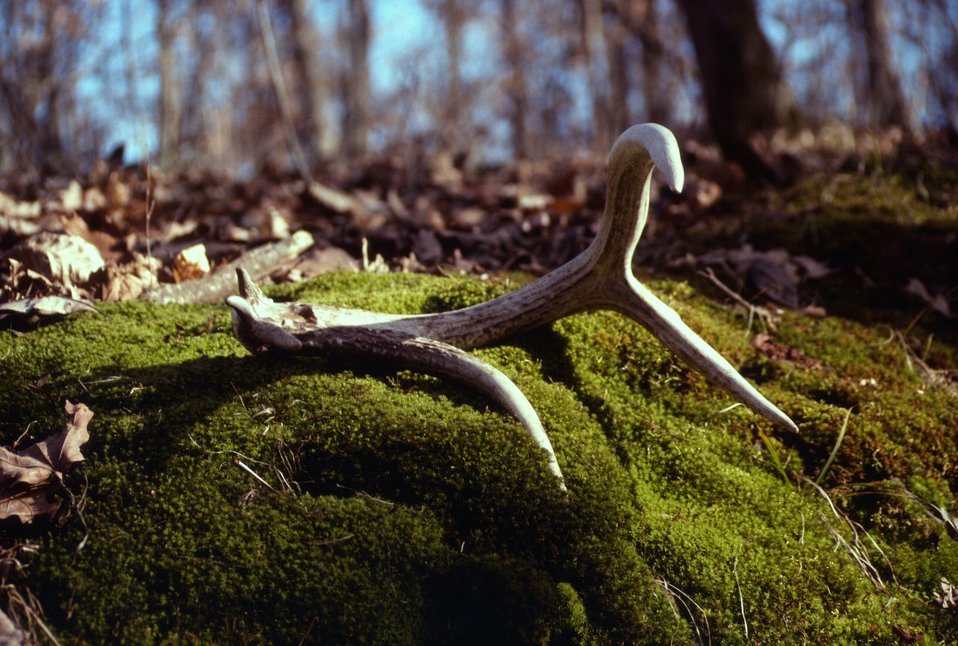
Antler

Credit: Terry Heiser / USFWS

Photo Contest Entry #171